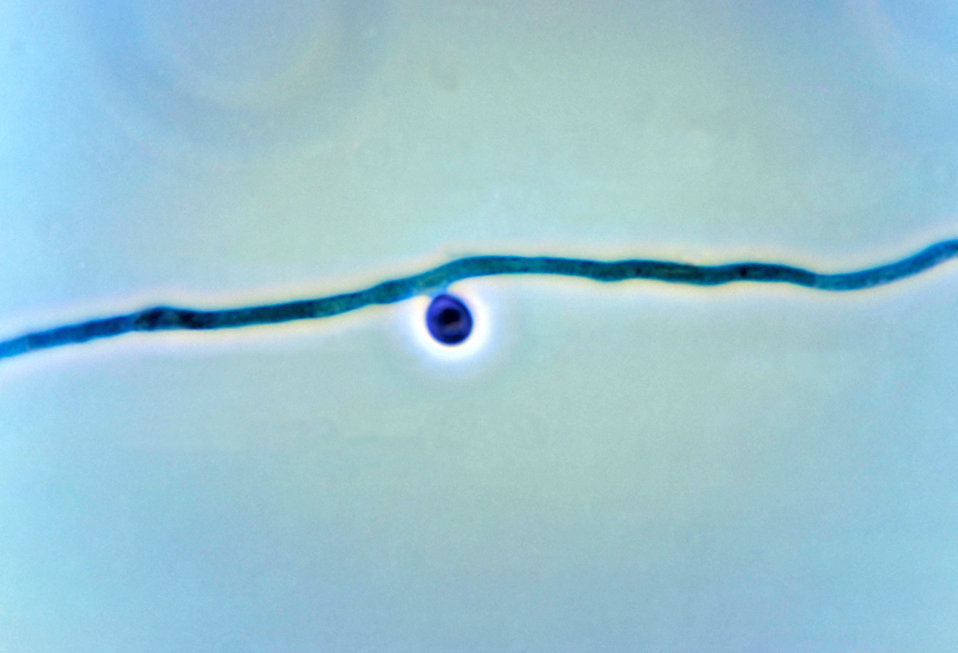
This photomicrograph shows a conidiophore with an attached conidium of the fungus Pseudallescheria boydii.